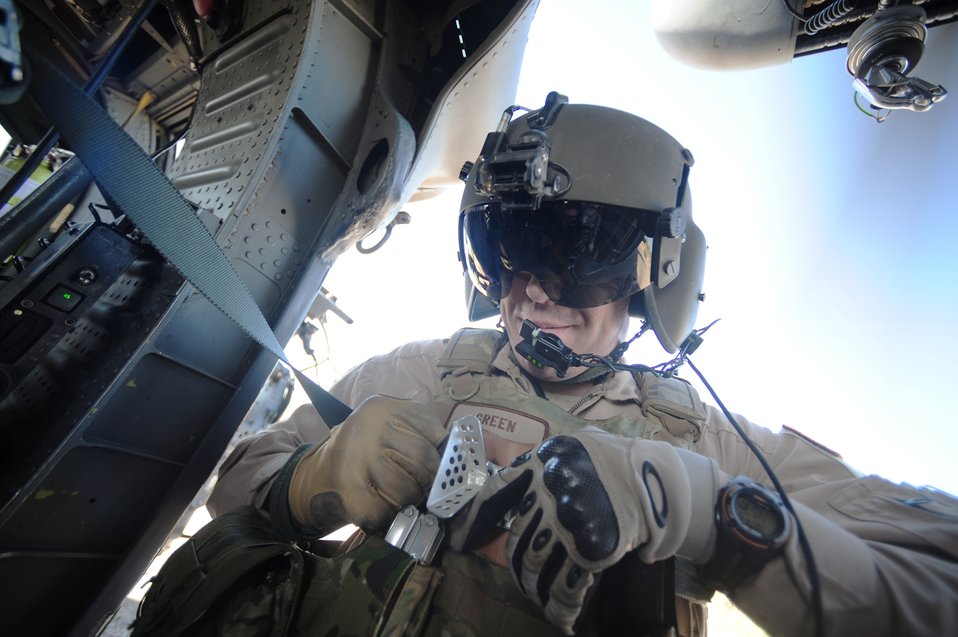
Safety first

Staff Sgt. Andrew Green puts on his gunner's belt, a personal protective device that secures him, during Angel Thunder 2010 April 15, 2010, near Davis-Monthan Air Force Base, Ariz. Sergeant Green is an HH-60 flight engineer with the 55th Rescue Squadron at Davis-Monthan AFB.